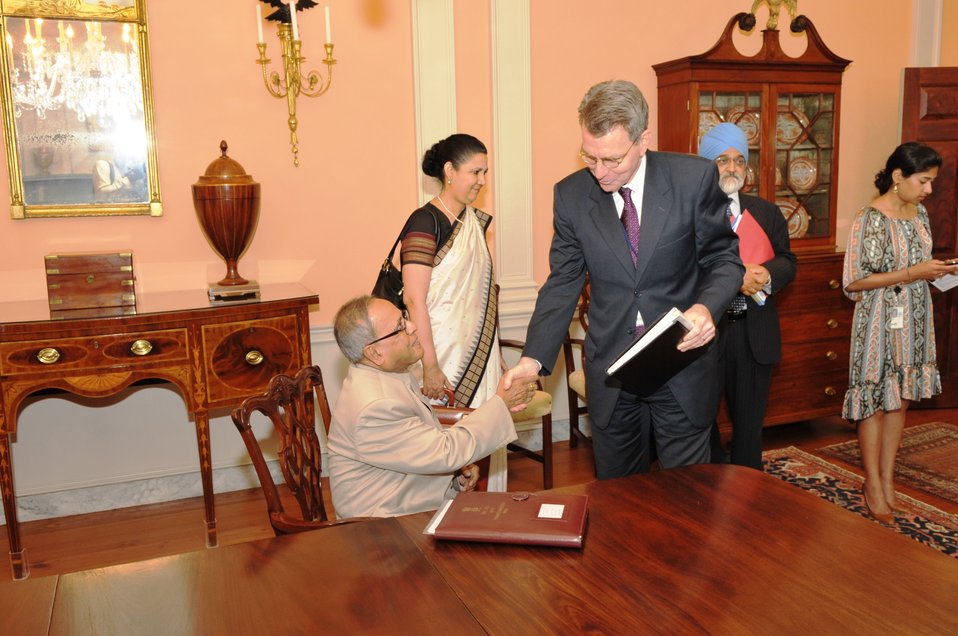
Acting Assistant Secretary Pyatt Shakes Hands With Indian Finance Minister Mukherjee

U.S. Acting Assistant Secretary Geoffrey Pyatt shakes hands with Indian Finance Minister Pranab Mukherjee at the U.S. Department of State in Washington, D.C., on June 22, 2010.